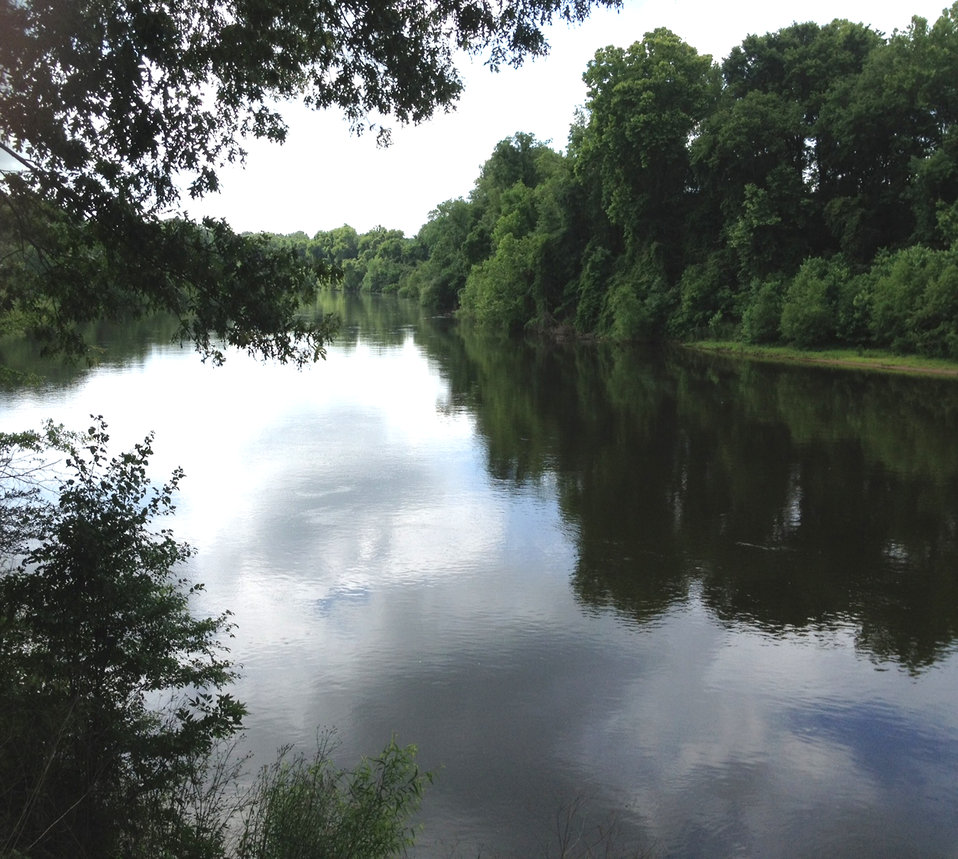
SCWRPriver

The U.S. Department of Agriculture’s (USDA) Natural Resources Conservation Service (NRCS) Wetlands Reserve Program (WRP) has improved and protected the Wateree River in Kershaw County, SC on May 8, 2012. WRP helps private landowners protect, restore and enhance wetlands. Wetlands benefit migratory birds, other wildlife and plants, including species of concern and those that are listed on state and federal lists of threatened and endangered species.